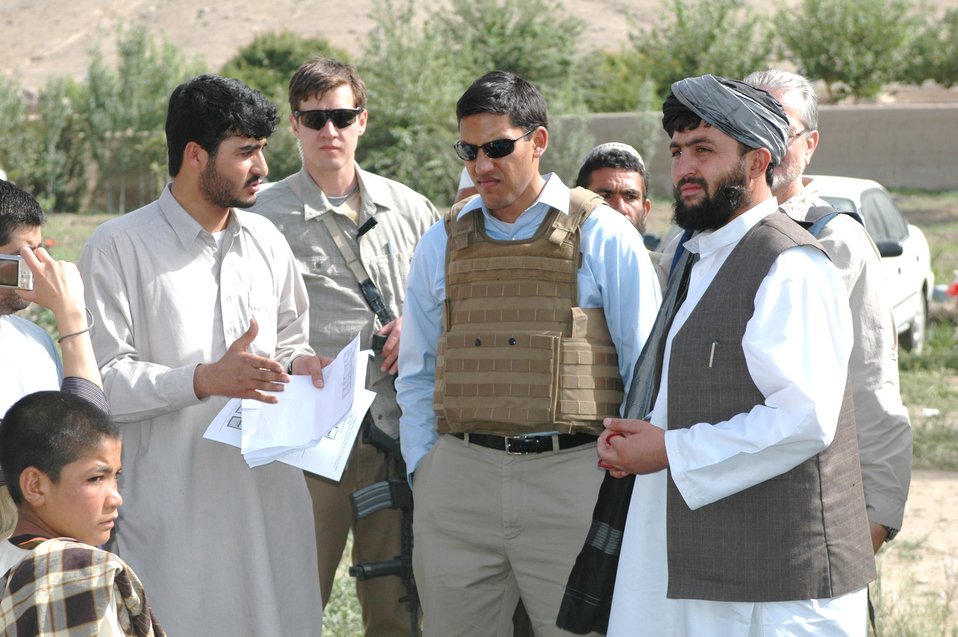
Dr Shah Visits Argandab April 10, 2010